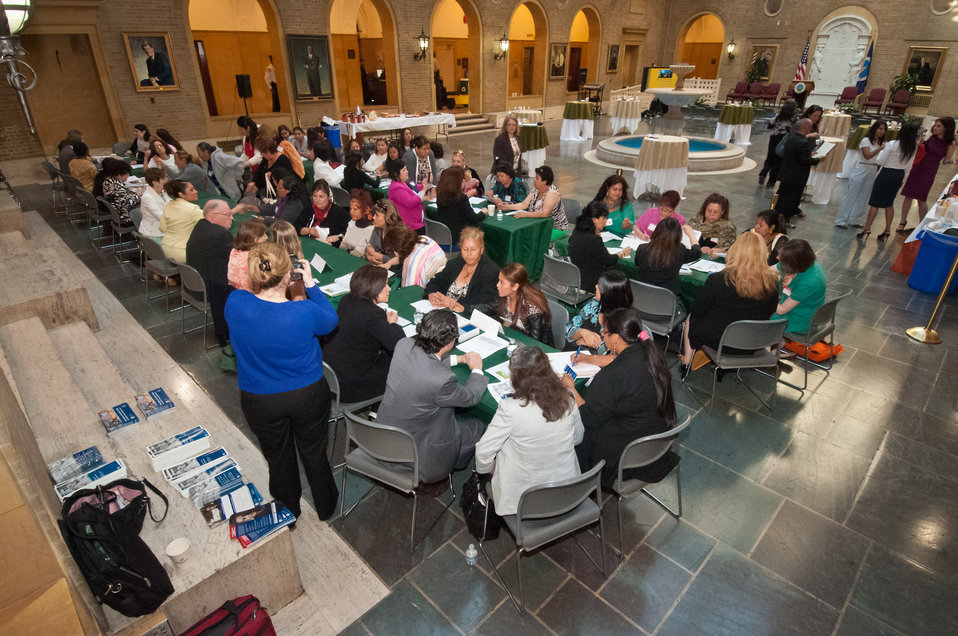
The United States Department of Agriculture (USDA),Office of Advocacy and Outreach hosted a Breakfast Networking Reception with Alianza Nacional de Campesinas an organization for Hispanic Farmworker Women to network and discuss their issues, priorities and opportunities in rural communities througout the United States in Washington, DC, Tuesday, April 9, 2013. The women were able to speak to representatives from nine Federal agencies with migrant programs: White House, USDA, Department of Health and Human Services (HHS), Housing and Urban Development (HUD), Department of Labor (DOL), Equal Employment Opportunity Commission (EEOC), Department of Education (DOE), Environmental Protection Agency (EPA) and United States Citizenship and Immigration Services (USCIS).